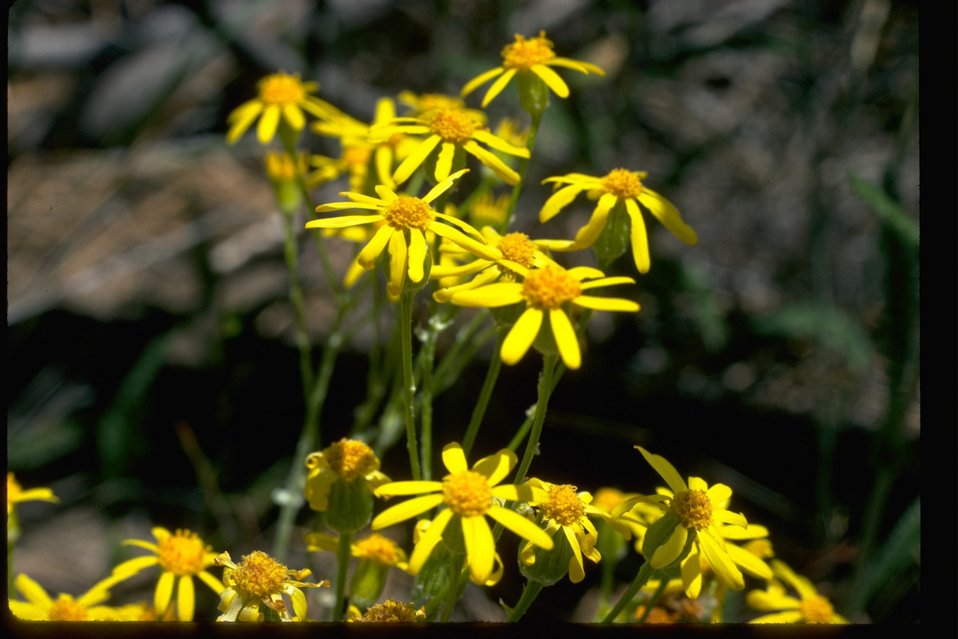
Senecio